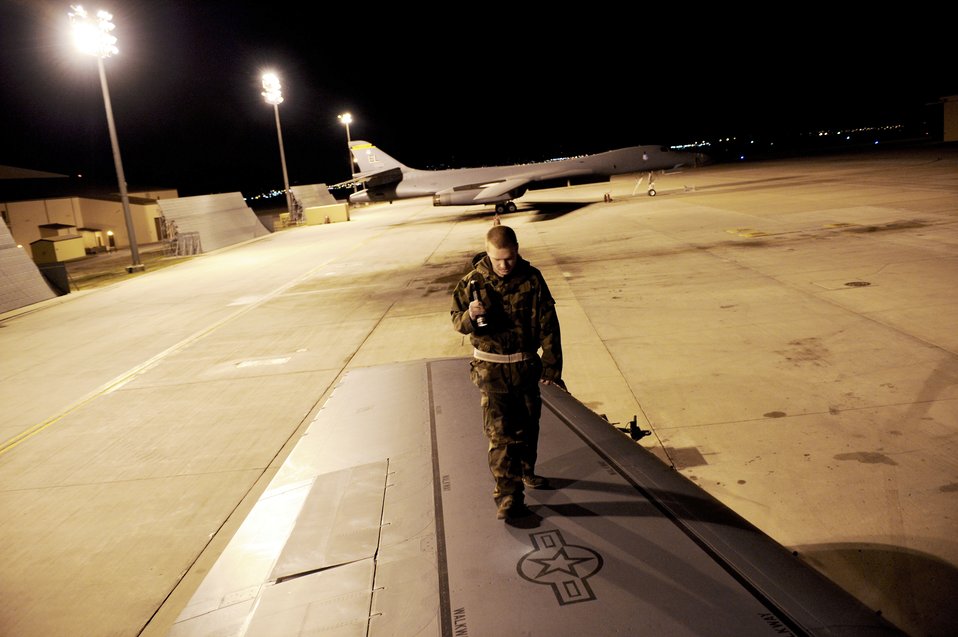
Inspection of a B-1B Lancer

Senior Airman Scott Foust takes a closer look at a B-1B Lancer wing March 31, 2010, at Ellsworth Air Force Base, S.D. Airman Foust is a crew chief with the 28th Aircraft Maintenance Squadron